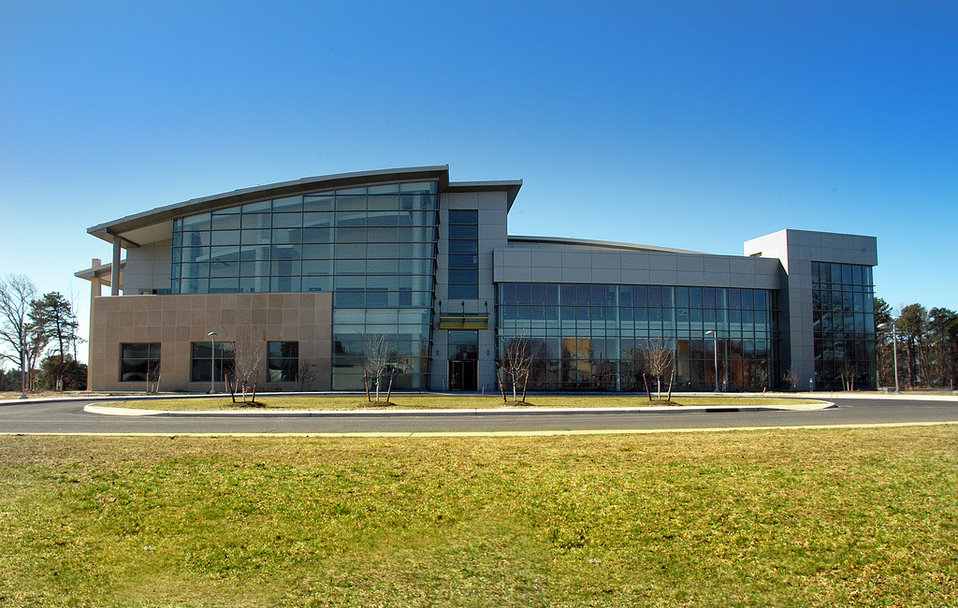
The Center for Functional Nanomaterials (CFN) at Brookhaven National Laboratory.
The overarching scientific theme of the CFN is the development and understanding of nanoscale materials that address the Nation's challenges in energy security, consistent with the DOE mission.